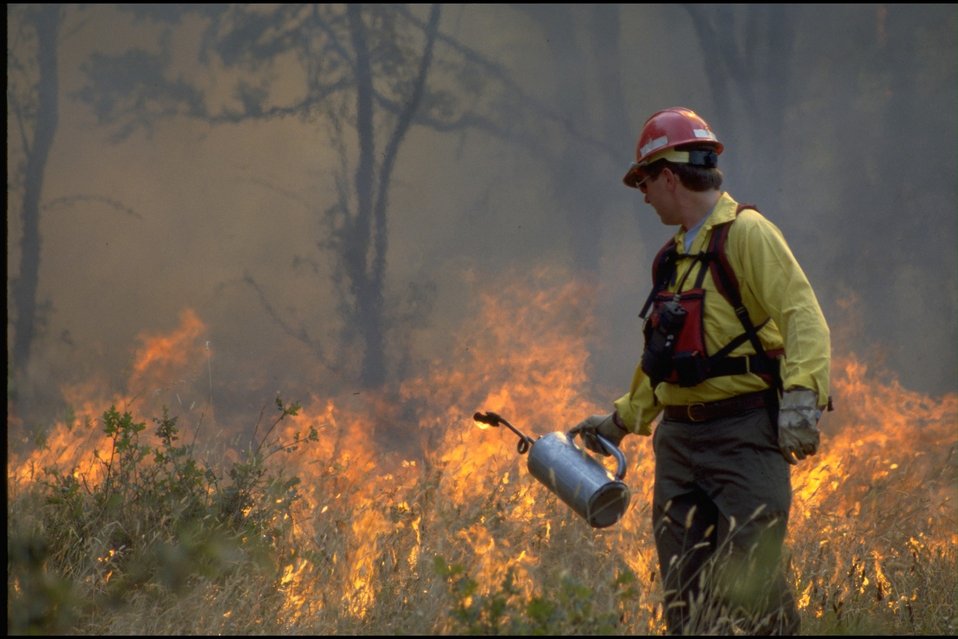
Long Tom ACEC burn (Eric Meyers).